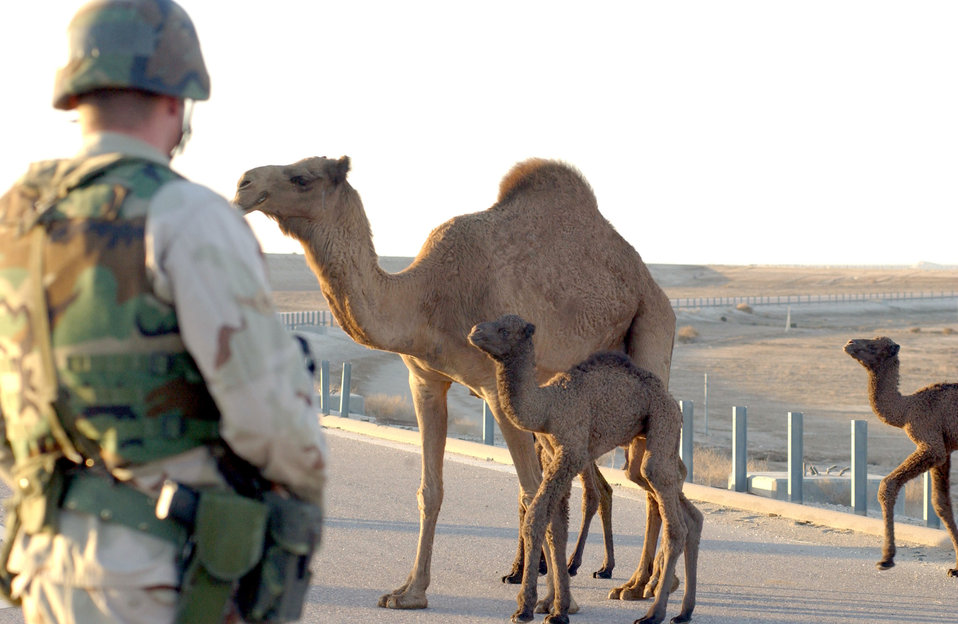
Standing guard

SOUTHWEST ASIA -- Airman Michael Holder stands guard as a herd of camels cross the road during a convoy Dec. 29. Animals can carry improvised explosive devices, and security forces airmen must treat them as hazards. Airman Holder is assigned to the 332nd Expeditionary Security Forces Squadron at Tallil Air Base, Iraq.